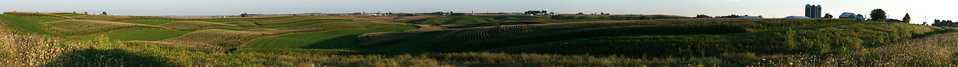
Virtual panorama of Iowa farms along Highway 151, in Northeast Iowa, on Tuesday, Aug. 16, 2011. Corn and soybeans fields can bee seen. A resting field is being grazed by cows. (Download original sized file for best viewing.)